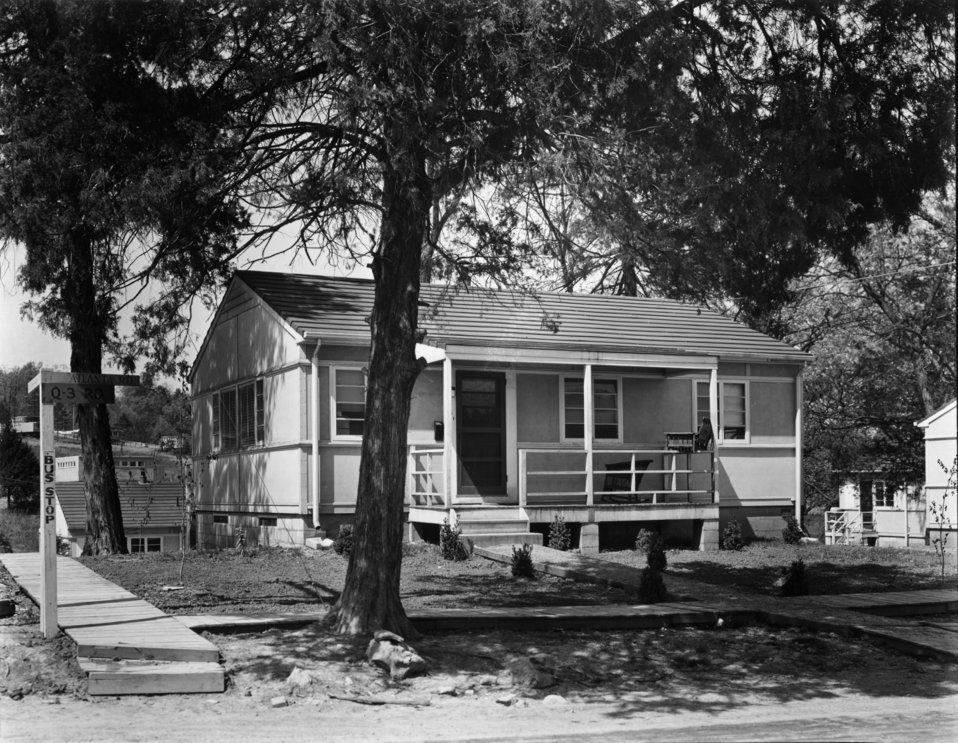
Housing at Oak Ridge